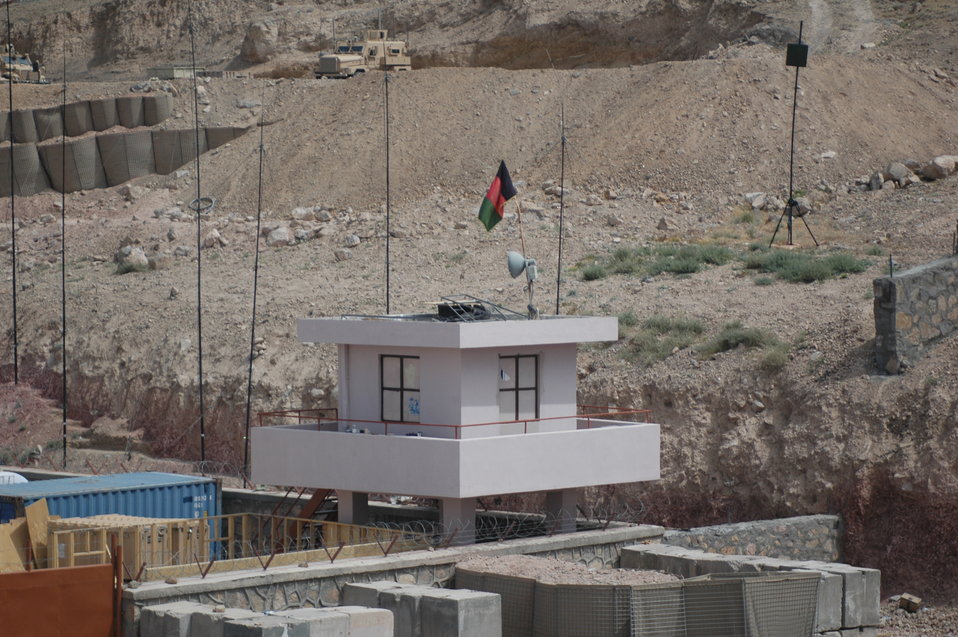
Dr Shah Visits Kandahar April 9, 2010